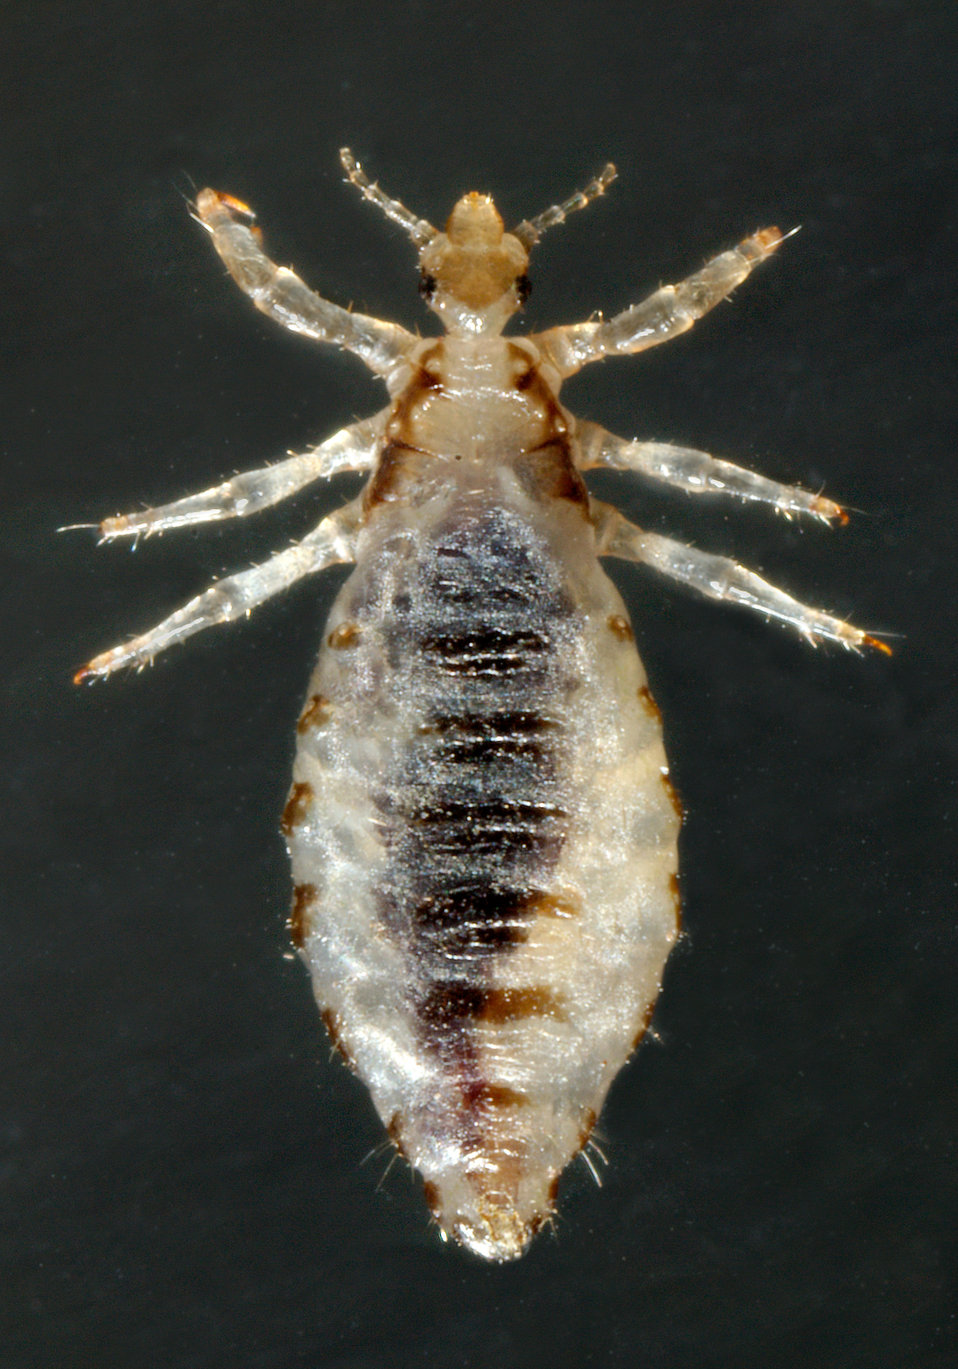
This 2006 photograph depicted a dorsal view of a male body louse, Pediculus humanus var. corporis. Some of the external morphologic features displayed by members of the genus Pediculus include an elongated abdominal region without any processes, and three pairs of legs, all equal in length and width. The distal tip of the male's abdomen is rounded, whereas, the female's (PHIL# 9202) is concave.Body lice are parasitic insects that live on the body, and in the clothing or bedding of infested humans. Infestation is common, found worldwide, and affects people of all races. Body lice infestations spread rapidly under crowded conditions where hygiene is poor, and there is frequent contact among people. Note the sensorial setae, or hairs that cover the louse's body, which pick up, and transmit information to the insect about changes in its environment such as temperature, and chemical queues. The dark mass inside the abdomen is a previously ingested blood meal.